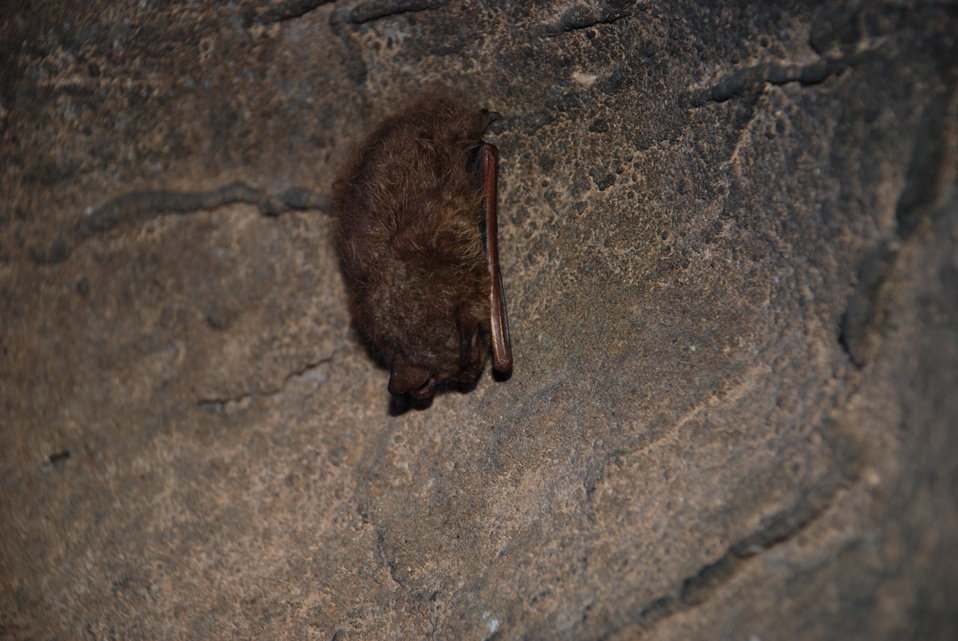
Eastern pipistrelle bat found in cave being sampled for Madison cave isopods.